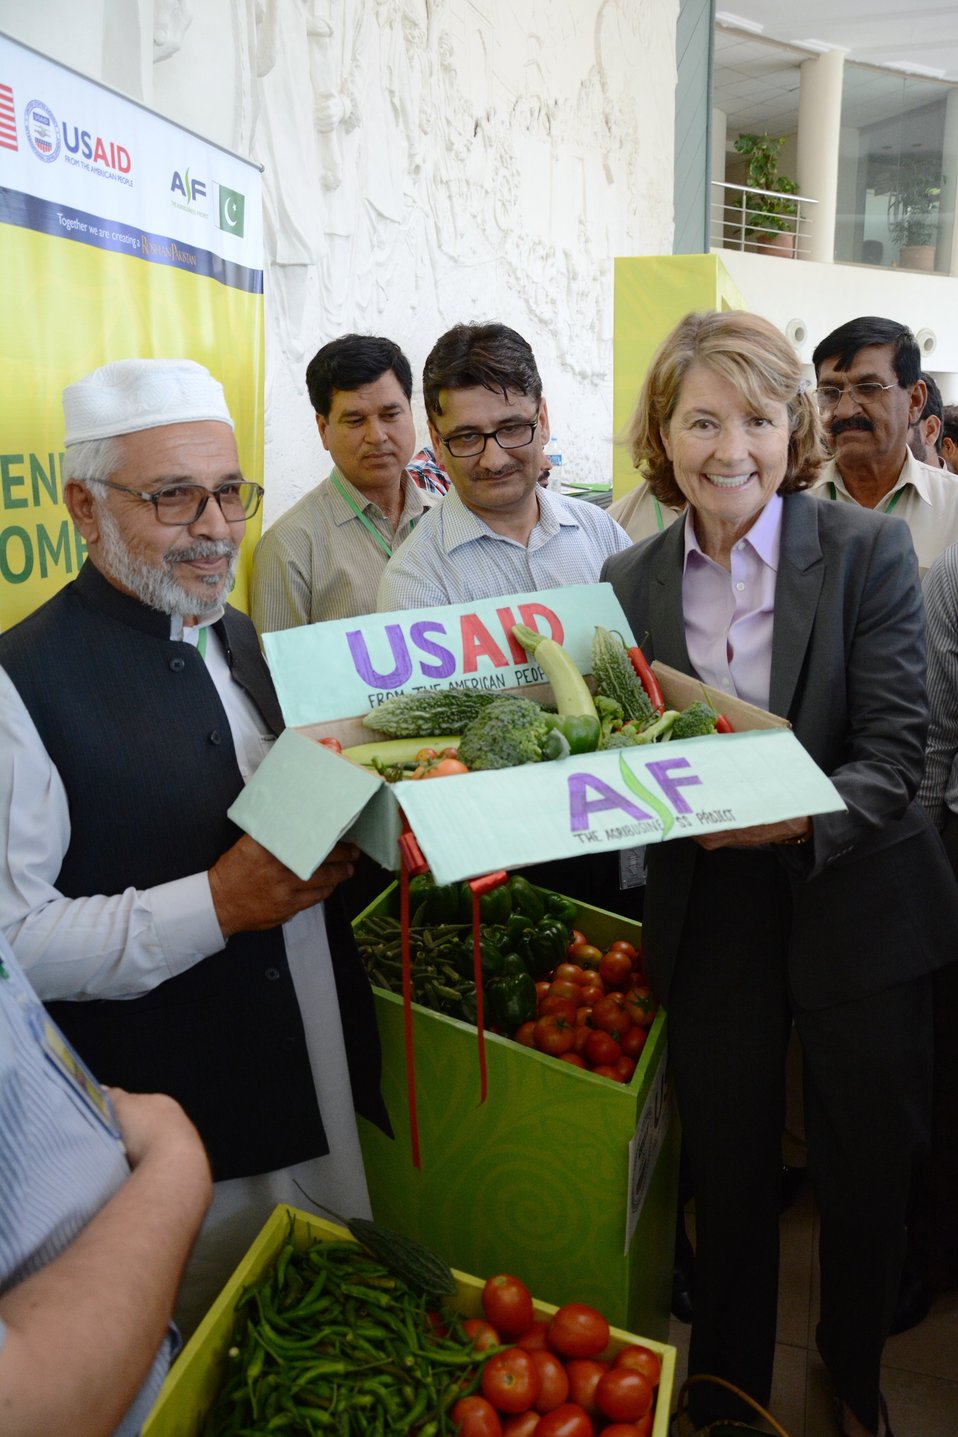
Picture (3) Pakistan vegetable Fair 2014 Islamabad May 15 2014